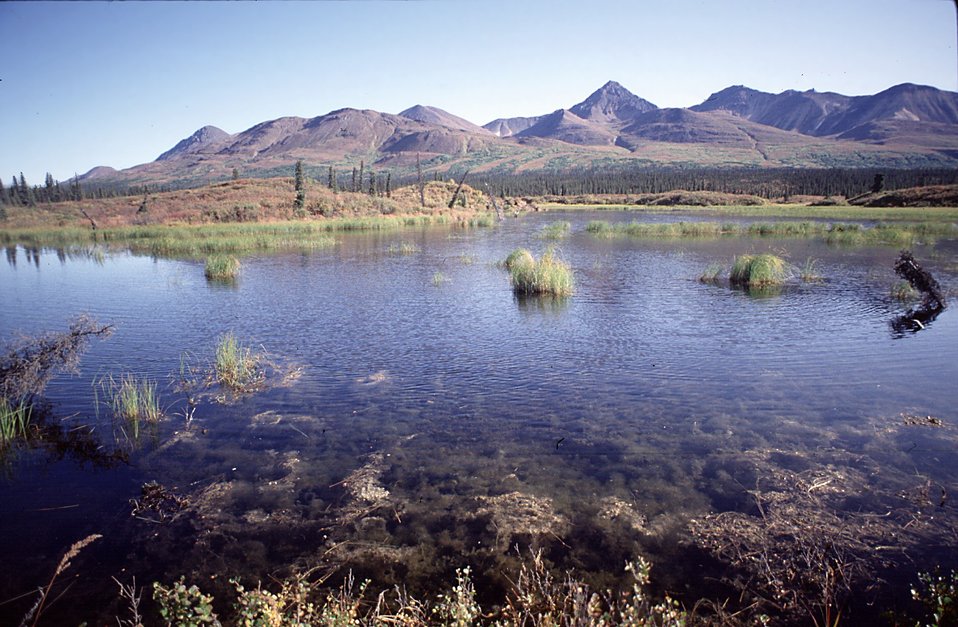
Pond along Denali Highway